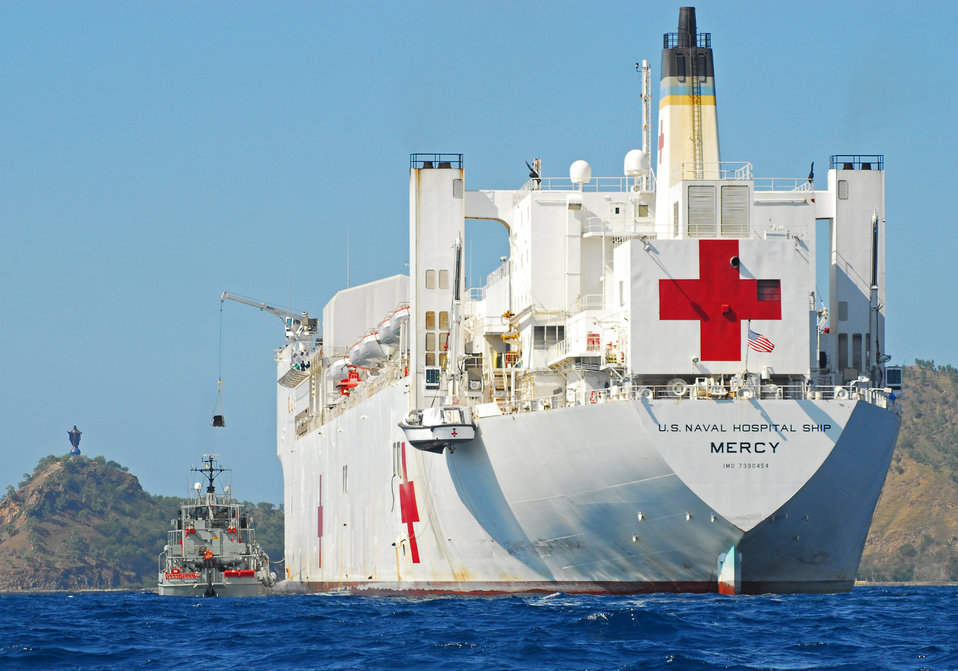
The Military Sealift Command hospital ship USNS Mercy (T-AH 19) transfers cargo aboard the Royal Australian Navy Heavy Landing Craft, HMAS Labuan (L128) while anchored near Timor-Leste in support of Pacific Partnership 2010 (PP10) on August 11, 2010. PP10 is the fifth in a series of annual U.S. Pacific Fleet humanitarian and civic assistance endeavors to strengthen regional partnerships.